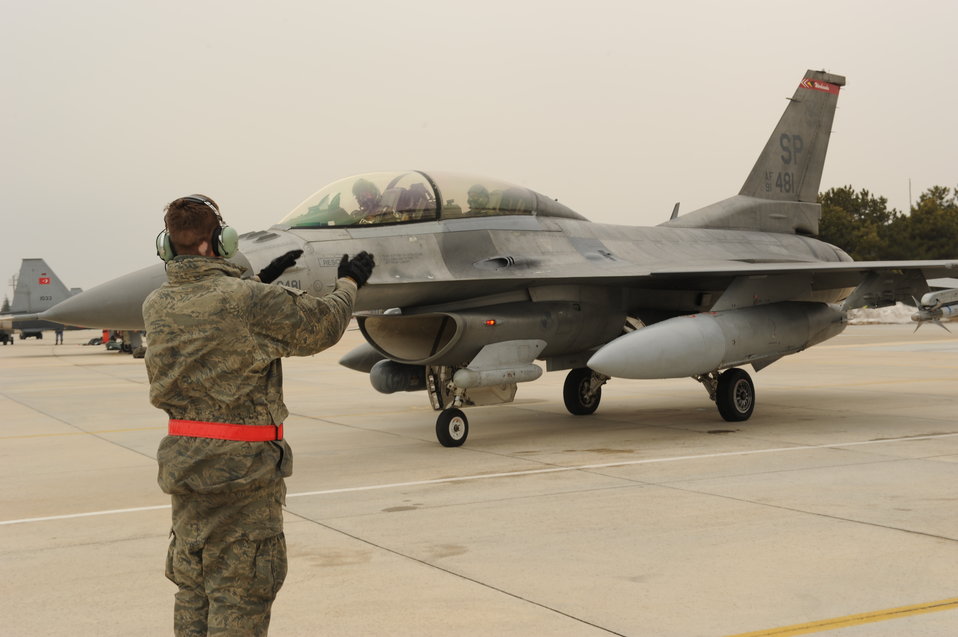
Anatolian Falcon 2012 builds strength, sharpens skills

Airman 1st Class Andrey Vasilchuk, a 52nd Aircraft Maintenance Squadron crew chief, directs a taxiing F-16 Fighting Falcon during Exercise Anatolian Falcon 2012 in Konya, Turkey, March 6, 2012. Exercise AF-12 provides an opportunity for the U.S. Air Force to maintain current training requirements as well as fly with long-time NATO ally Turkey.